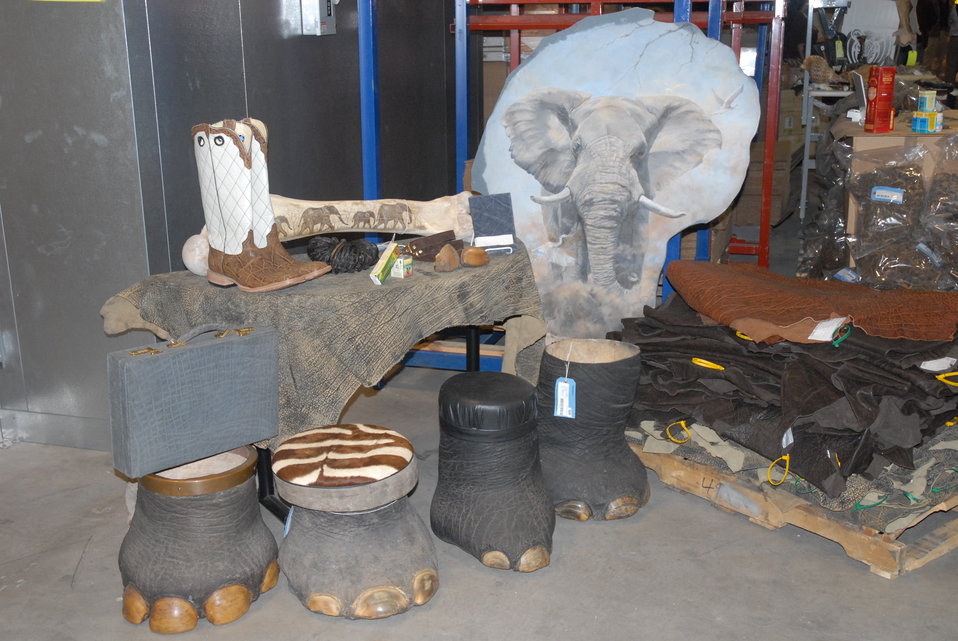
Elephants are being slaughtered for ivory and other parts at unprecedented rates.